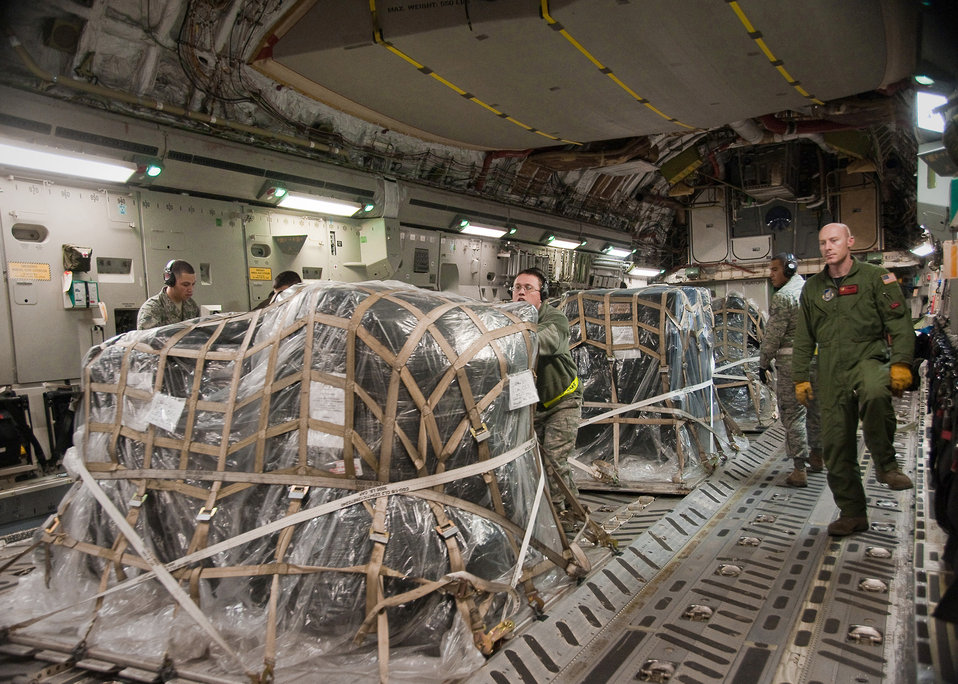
Contracting Airmen play crucial role in Operation Tomodachi

Airmen from the 730th Air Mobility Squadron unload water pumps and hoses off a C-17 Globemaster III March 30, 2011, at Yokota Air Base, Japan. The aircraft delivered 20,000 pounds of cooling equipment for the Fukushima nuclear plant.